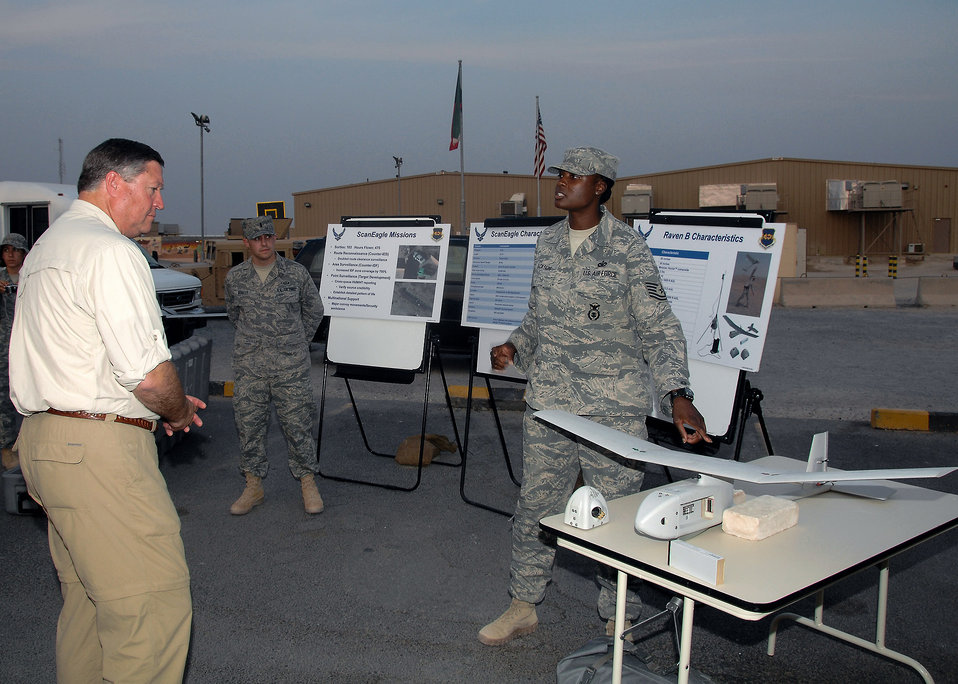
386th AEW welcomes SECAF

Tech. Sgt. Carmeeka Jackson briefs Secretary of the Air Force Michael B. Donley about the capabilities of a Raven B unmanned aircraft Oct. 14 at an air base in Southwest Asia. Secretary Donley visited with Airmen from the 386th Air Expeditionary Wing, coalition partners and sister services during his visit. Sergeant Jackson is assigned to the 586th Expeditionary Security Forces Squadron.